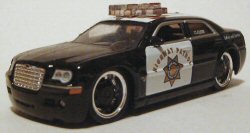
nl:Jada Toys